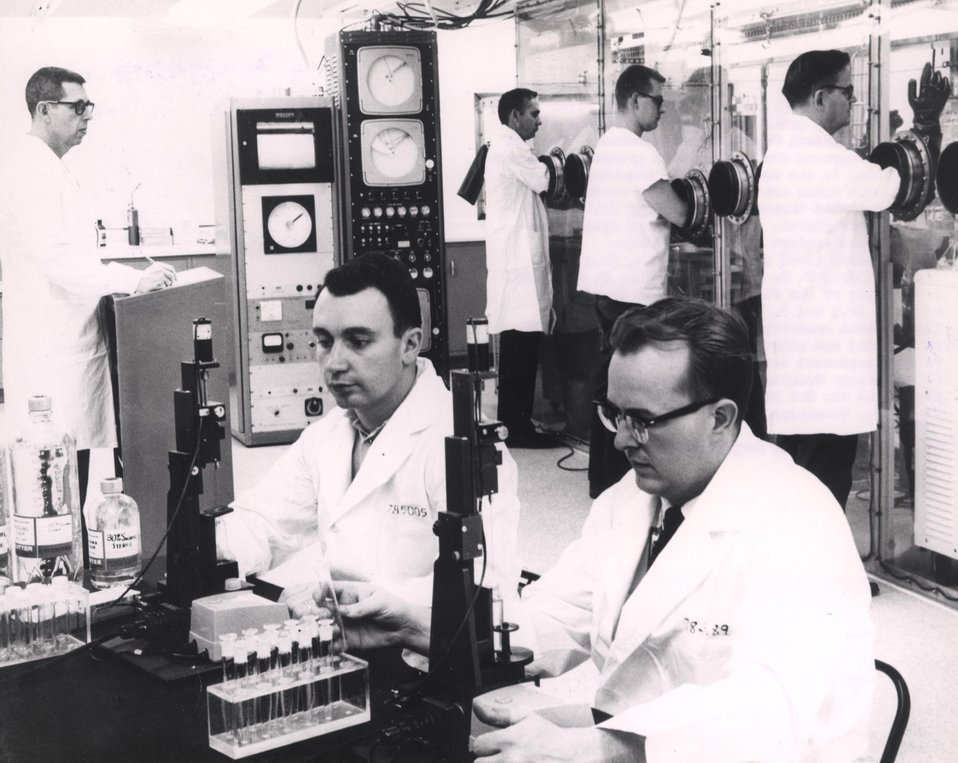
Oak Ridge's new virus isolation facility gets a final check-out by the staff of the Biophysical Separation Laboratory. The men in the foreground are working with gradient analyzers while those in the background are checking the centrifuges which are located within containment boxes reachable through special ports fitted with large rubber gloves. c. 1965